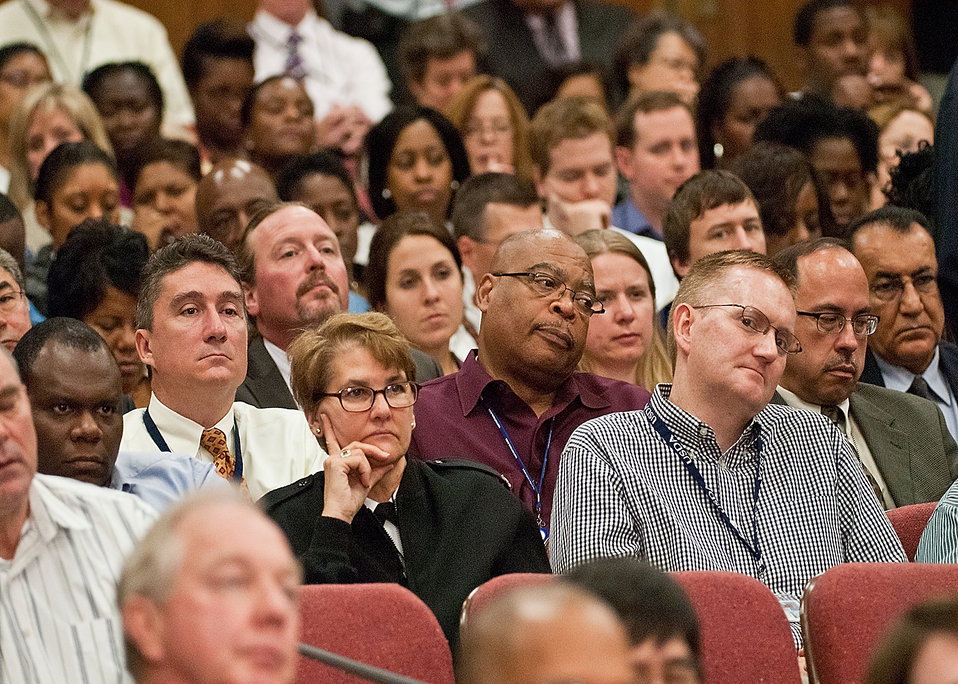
U.S. Department of Agriculture employees listen to Agriculture Secretary Tom Vilsack during the Cultural Transformation Recognition Ceremony at the Jefferson Auditorium, US Department of Agriculture in Washington, DC, on Tuesday, October 4, 2011. Cultural Transformation is the process of creating a workplace where all employees and customers are treated with dignity, respect and the opportunity for success. Recognizing the important contributions of all employees to the operation of the United States Department of Agriculture. The goal of cultural transformation is to get everyone at USDA – from the Under Secretaries to employees at every grade level, in every location - to ensure USDA is a place where there’s opportunity for all to reach their full potential. Only then can USDA provide its customers with exceptional service in an equitable manner.